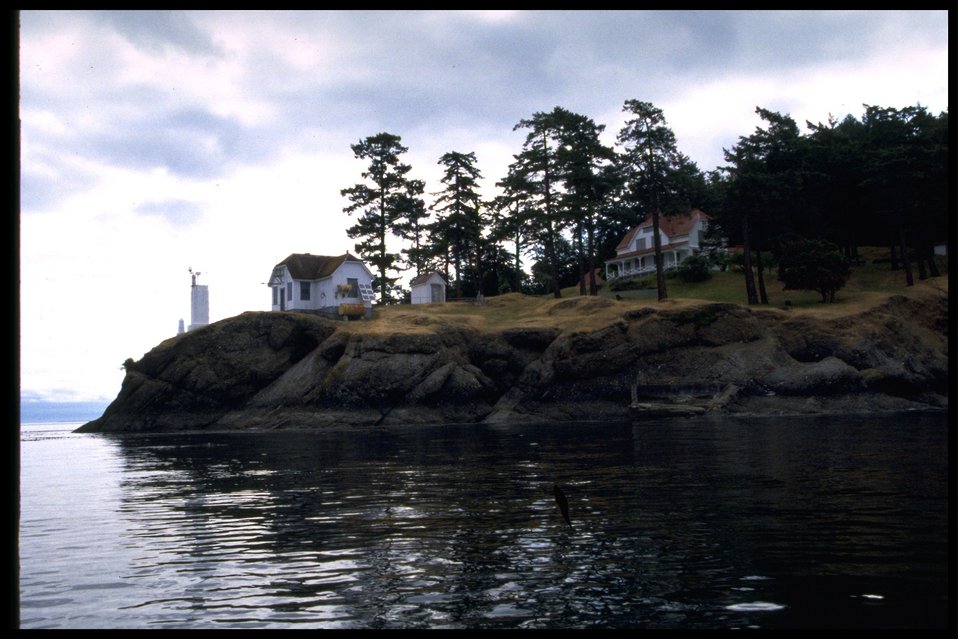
Turn Point from water with light station and buildings. Series of 17 photos.